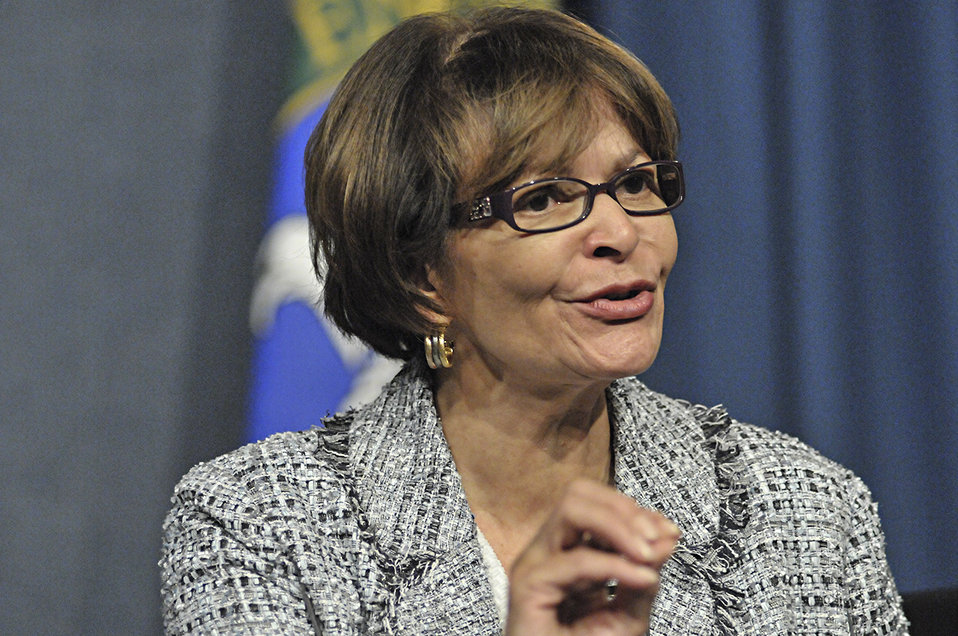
Panel: Increasing Minority Participation in the Energy Sector

The Honorable Hazel O'Leary, former Secretary of Energy, speaks on September 24, 2013, at the Minorities in Energy Initiative Launch.